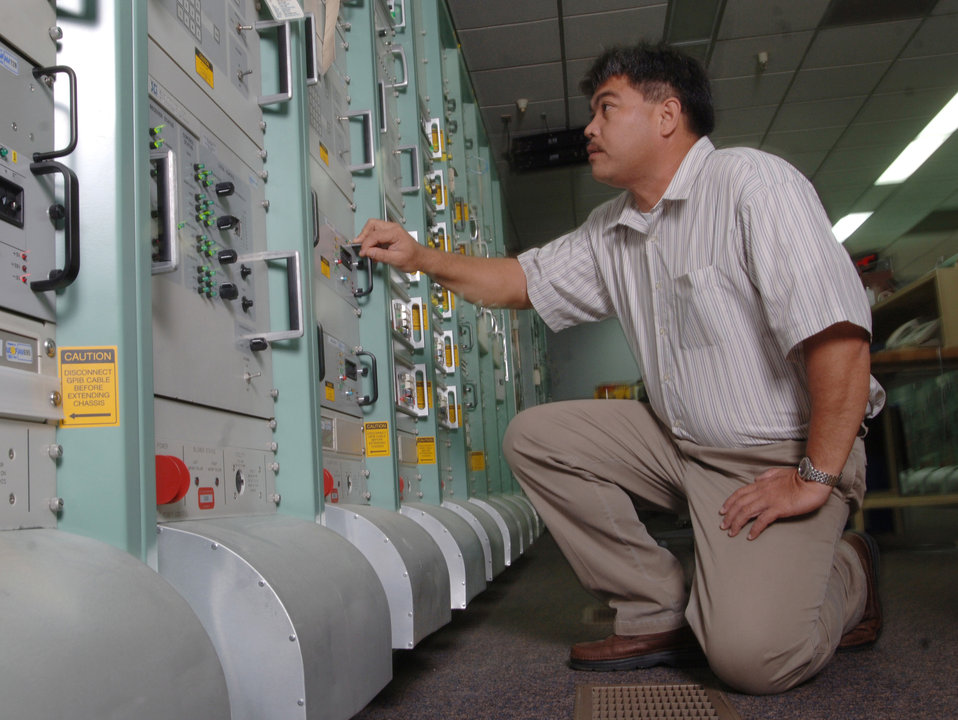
Space security

ANDERSEN AIR FORCE BASE, Guam (AFPN) -- Juan Arriola troubleshoots a switch matrix equipment during an inspection at his facility. Mr. Arriola is an automated remote tracking controller with the Detachment 5, 22nd Space Operations Squadron here. Their mission is to execute on demand, real-time, command and control operations for launch and operations of 170 Department of Defense, national, allied and civilian satellites.